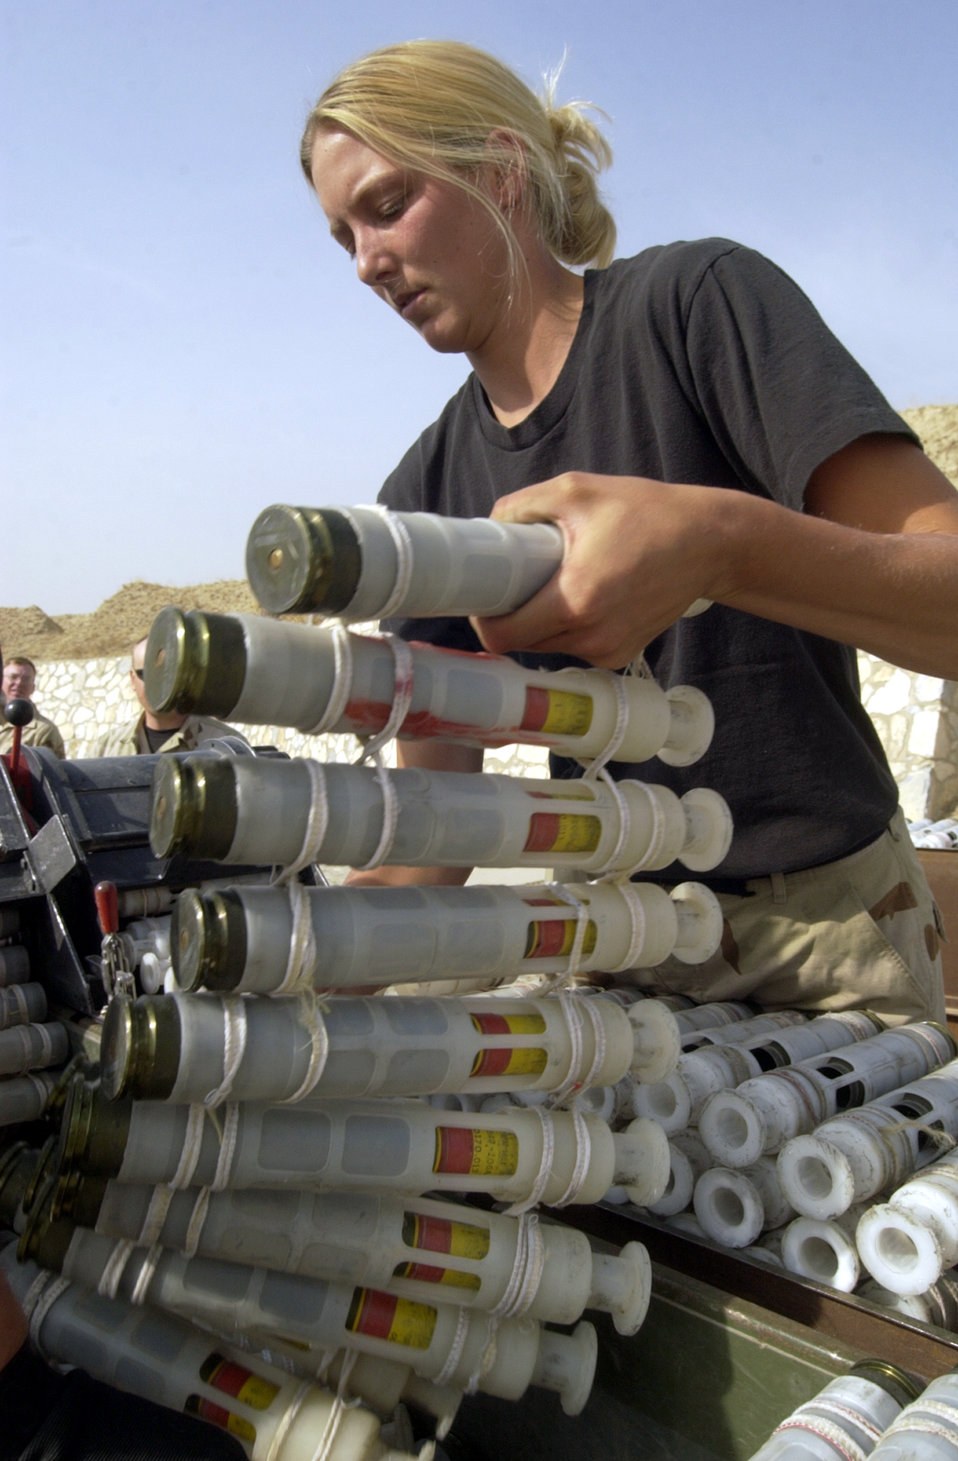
Preparing ammo

BAGRAM AIR BASE, Afghanistan -- Senior Airman Margot Hubbard prepares 30 mm ammunition rounds for processing and loading into an A-10 Thunderbolt II where they will be used in combat here. Hubbard is assigned to the 455th Expeditionary Operations Group and is deployed as part of Air and Space Expeditionary Force Blue from Spangdahlem Air Base, Germany. Airmen with AEF Silver are replacing those with AEF Blue.